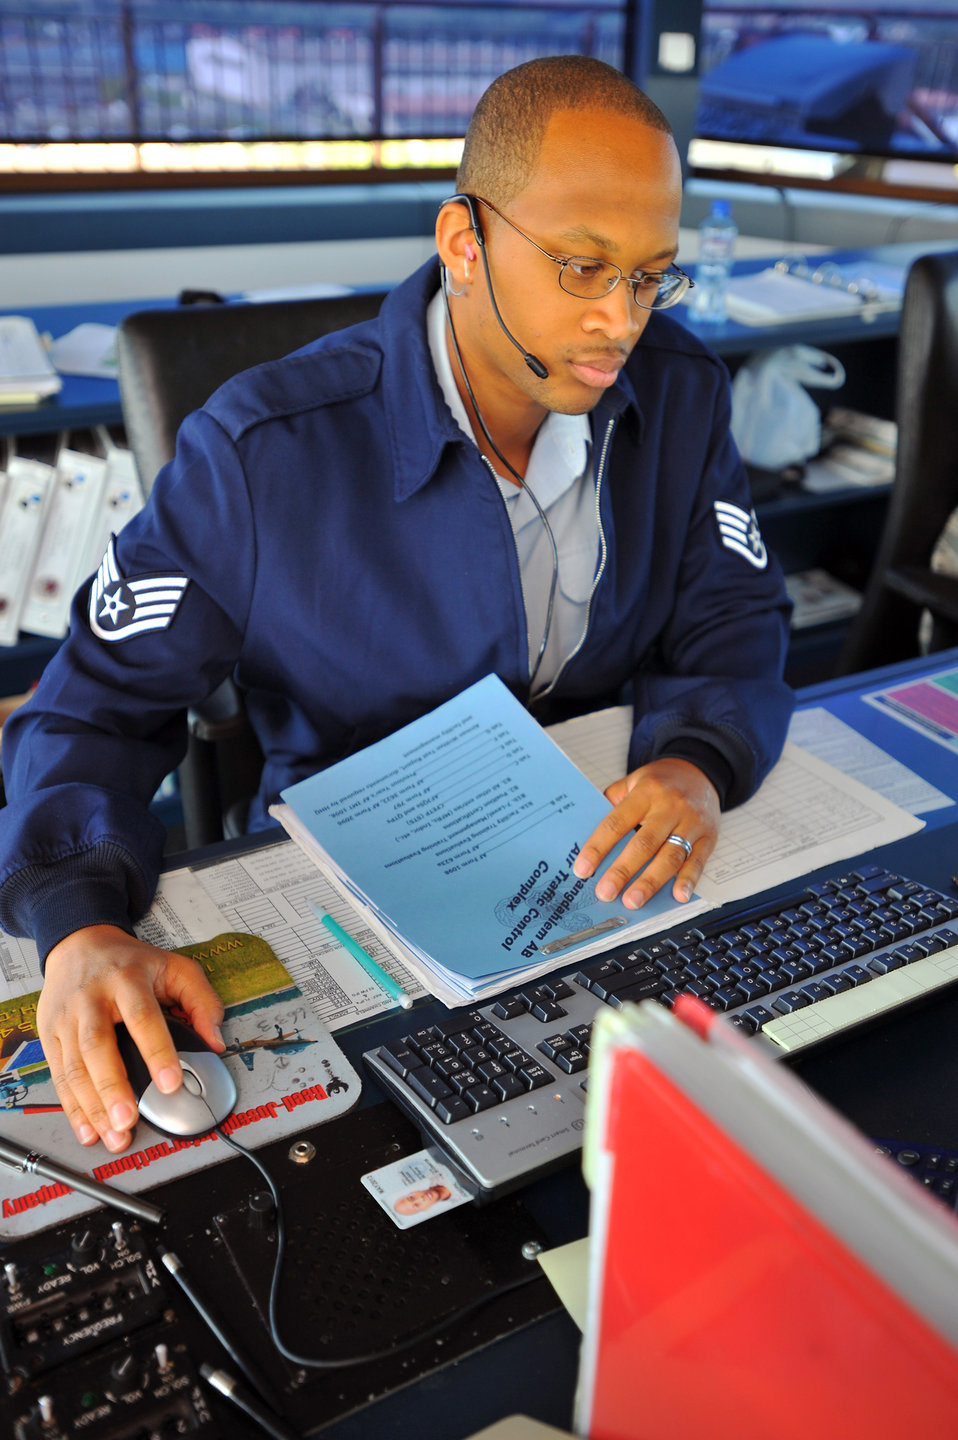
Dotting the lowercase

Staff Sgt. Reginald Joseph fills out forms and checklists Aug. 1, 2011, inside the control tower at Spangdahlem Air Base, Germany. Joseph is an air traffic controller assigned to the 52nd Operations Support Squadron.